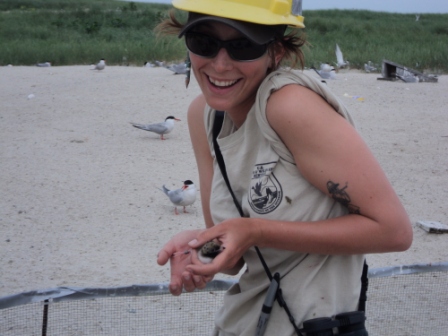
Bird banding

U.S. Fish and Wildlife Service